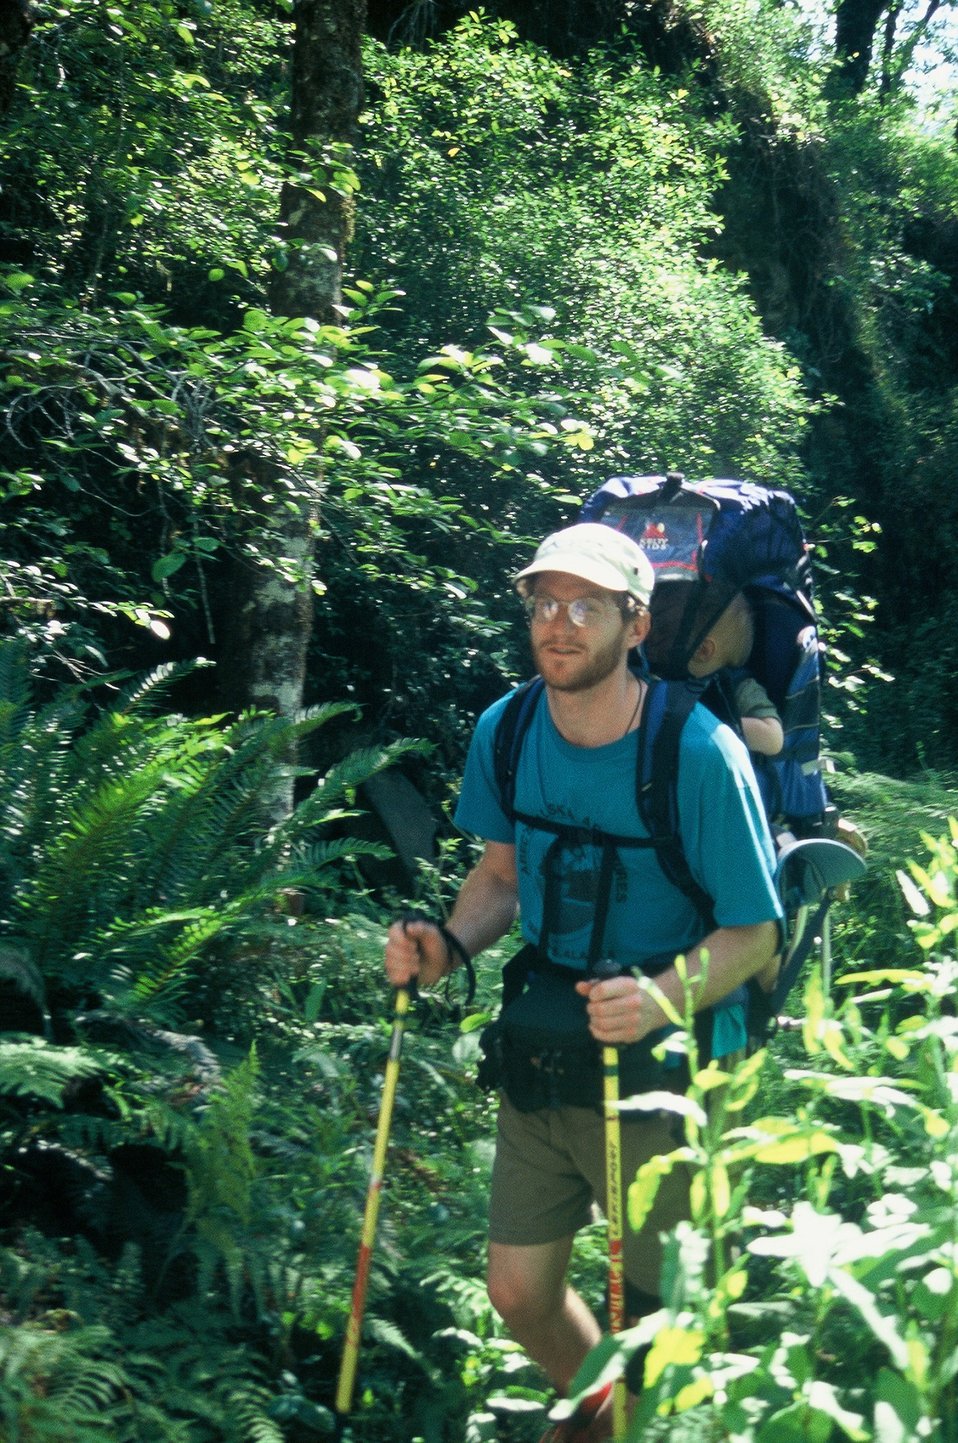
Wild section of the Rogue River from Grave Creek to Foster Bar May 19 to May 22.